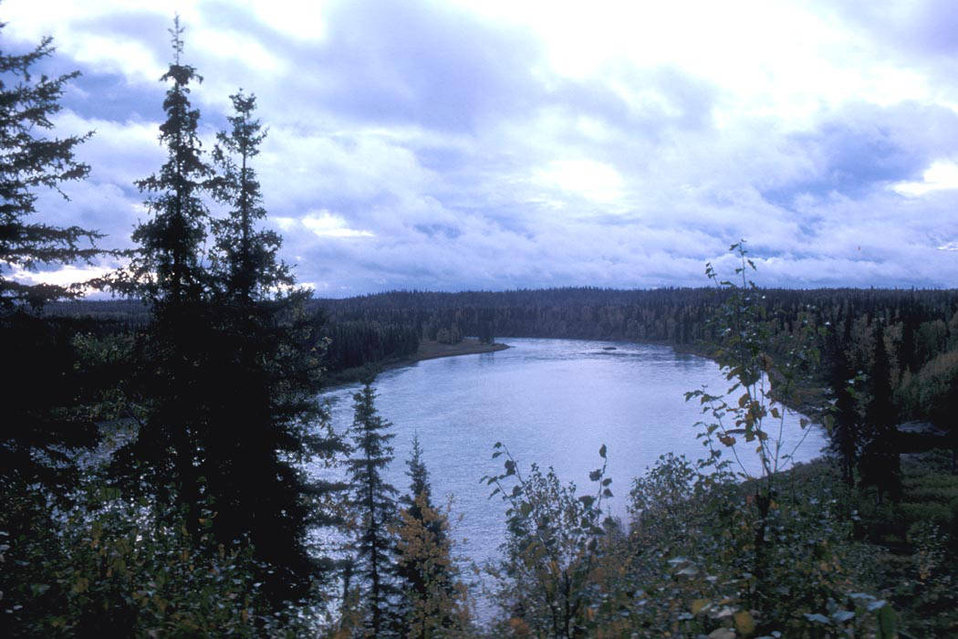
Kenai River

Photo credit: USFWS

As the climate continues to warm and dry, the western side of the Kenai Peninsula could see an almost catastrophic loss of forest. Salmon populations—and the communities that depend on salmon—are projected to suffer because of higher stream temperatures and increased glacial sediment